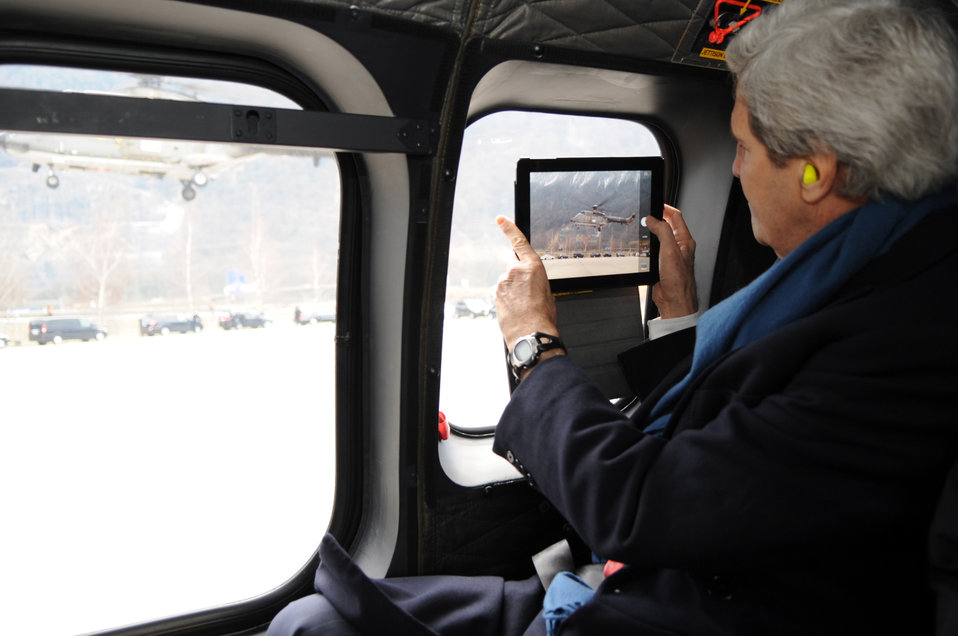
Secretary Kerry Photographs Liftoff of Press Helicopter in Switzerland

U.S. Secretary of State John Kerry uses his iPad to photograph a Swiss Air Force helicopter carrying members of his traveling press corps as it takes off from Montreux, Switzerland, on January 23, 2014.